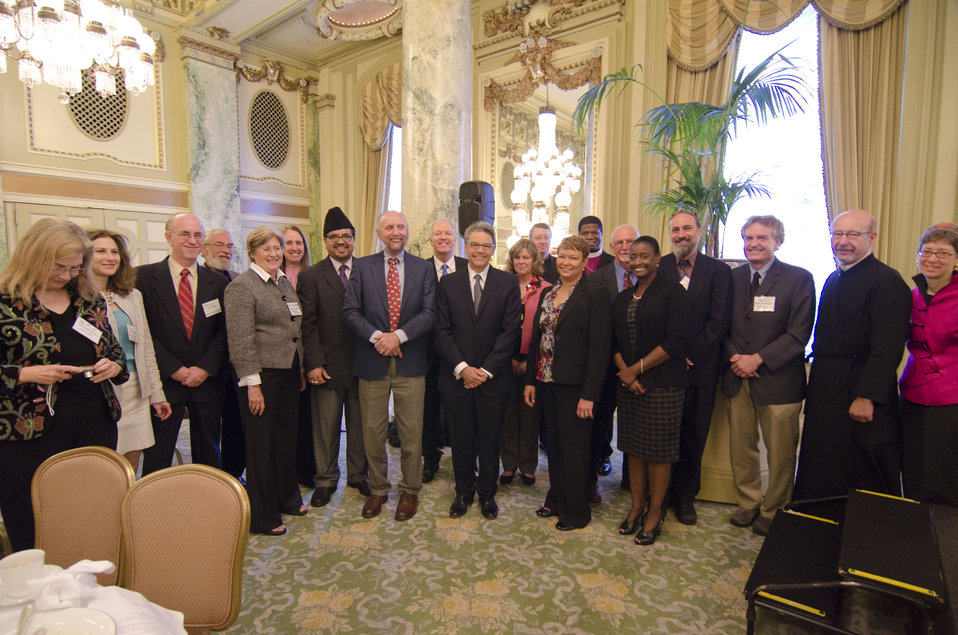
2011-05-05 NRCCCPrayerBreakfast 084

US EPA Administrator Lisa P. Jackson with Religious Leaders and guests(Rev. Susan Chamberlain, Sara Valenzuela, Patrick Calahon, Rabbi David Shneyer, Susan Cleveland, Susan Bass, Imam Nasim Mahdi, Frederick Krueger, Carlos Agnesi, Rabbi Warren Stone, Kathleen Rogers, Fr. Daniel Webster, Bishop Eugene Sutton, Rev. Owen Owens, Rabbi Fred Scherlinder Dobb,
Rev. Tom Carr, Fr. Sergei Kapral, and Dr. Mirele Goldsmith) at the
National Religious Coalition on Creation Care Prayer Breakfast